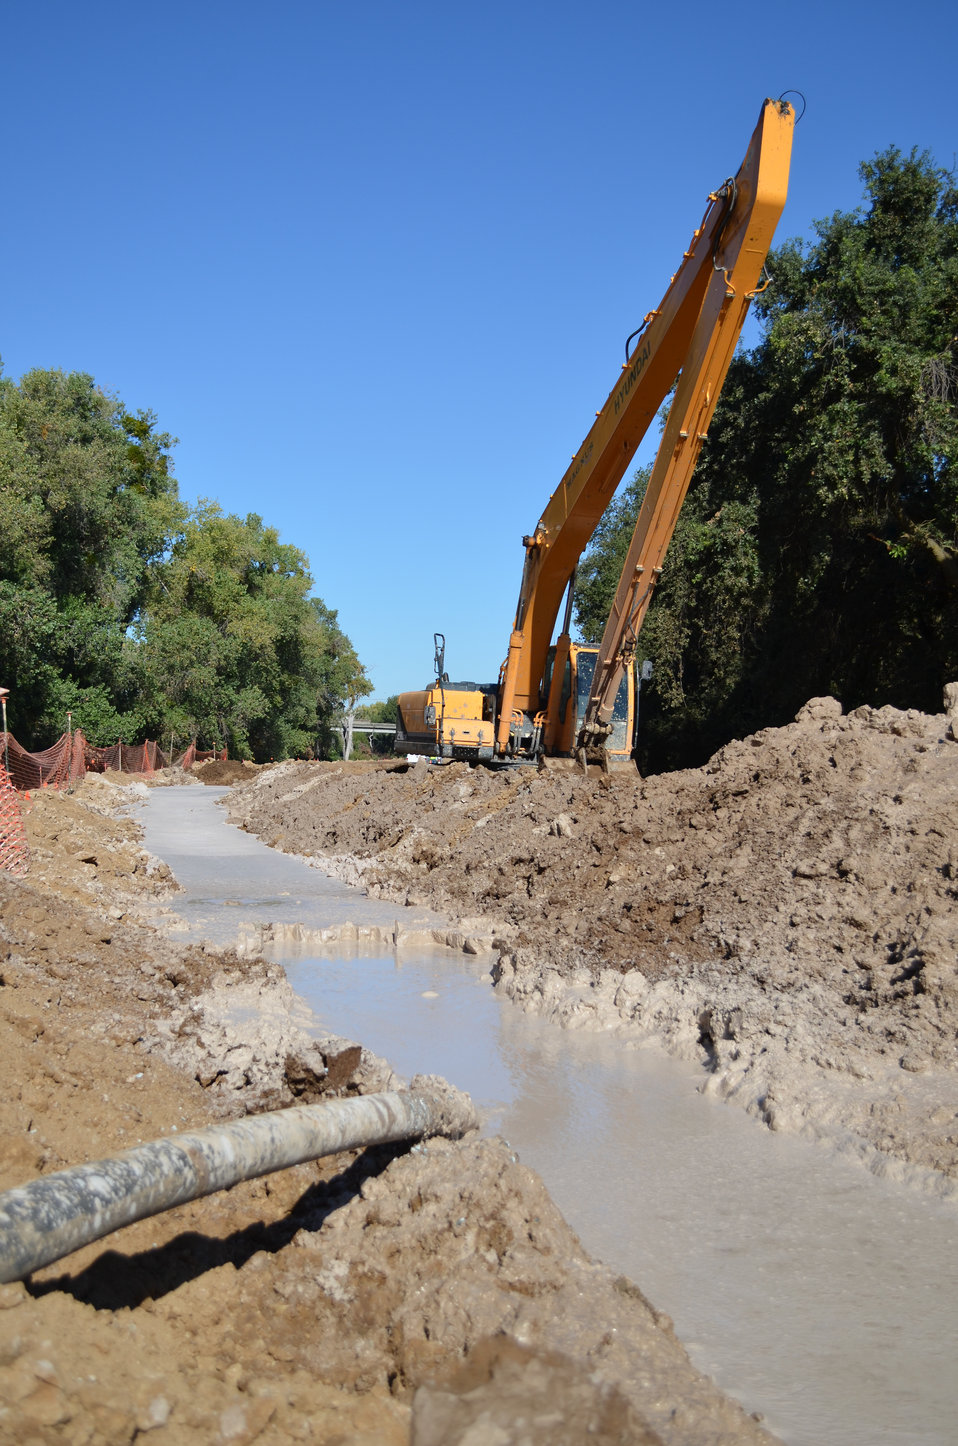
Work continues on 3,300 feet of seepage cutoff wall

Work continues Oct. 2, 2013, on 3,300 feet of seepage cutoff wall along the north bank of the American River in north Sacramento, Calif. Completion is targeted for mid-October. Construction crews for the U.S. Army Corps of Engineers Sacramento District are helping ensure the levee's height and slope will be brought back to pre-construction levels by November 1 – in time for the rainy season.